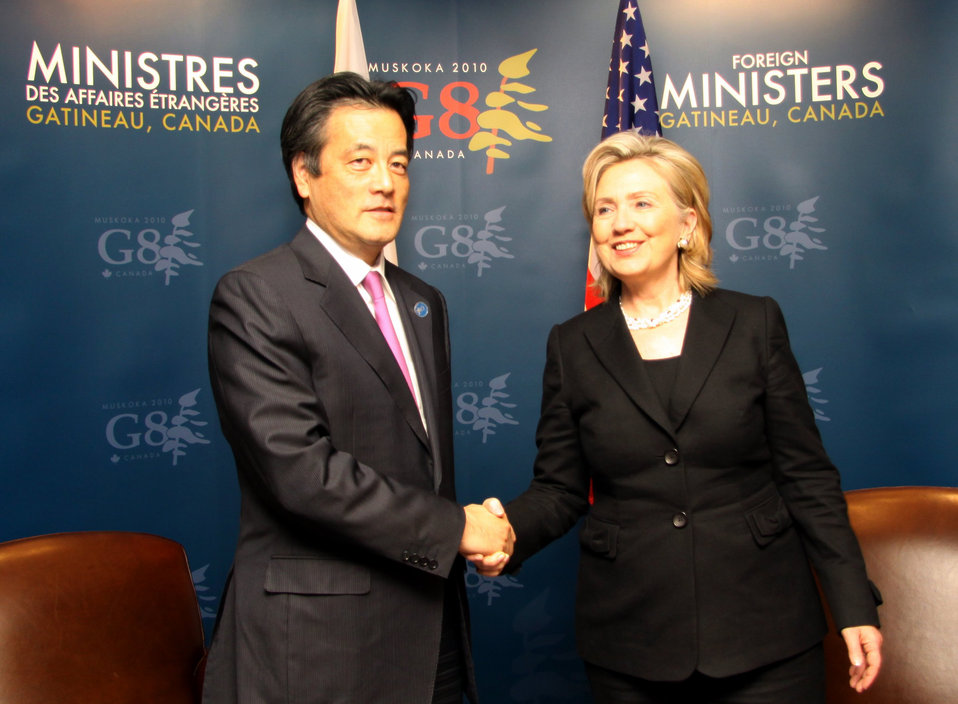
Secretary Clinton Meets With Japanese Foreign Minister

U.S. Secretary of State Hillary Rodham Clinton with Japanese Foreign Minister Katsuya Okada during the G8 Foreign Ministers Meeting in Ottawa, Canada March 29, 2010.